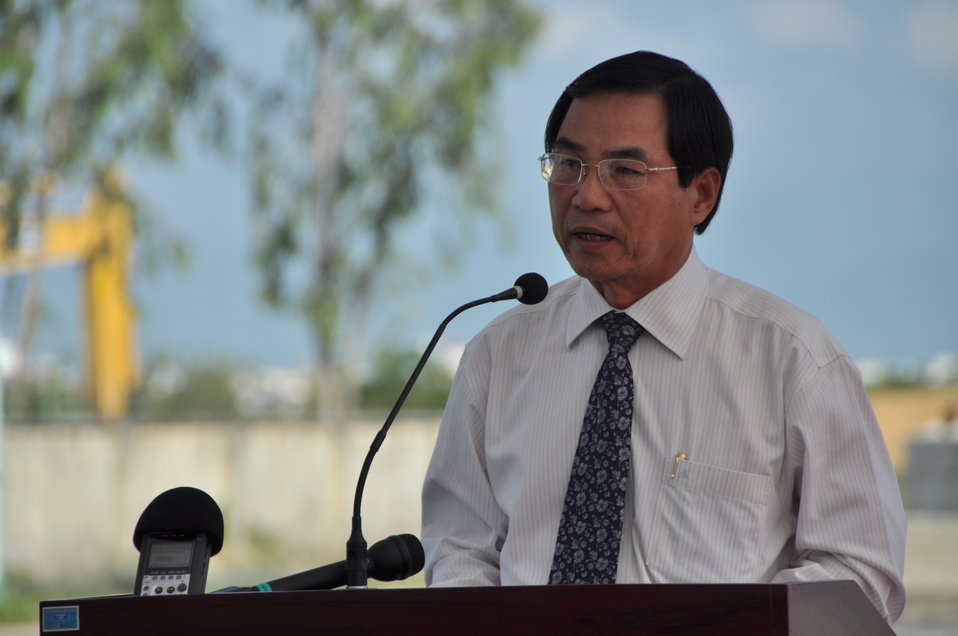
Media Tour of Environmental Remediation of Dioxin Contamination at Danang Airport

Mr. Phung Tan Viet, Vice Chairman of the Danang People's Committee, addresses the media.

Danang, Vietnam
April 24, 2013